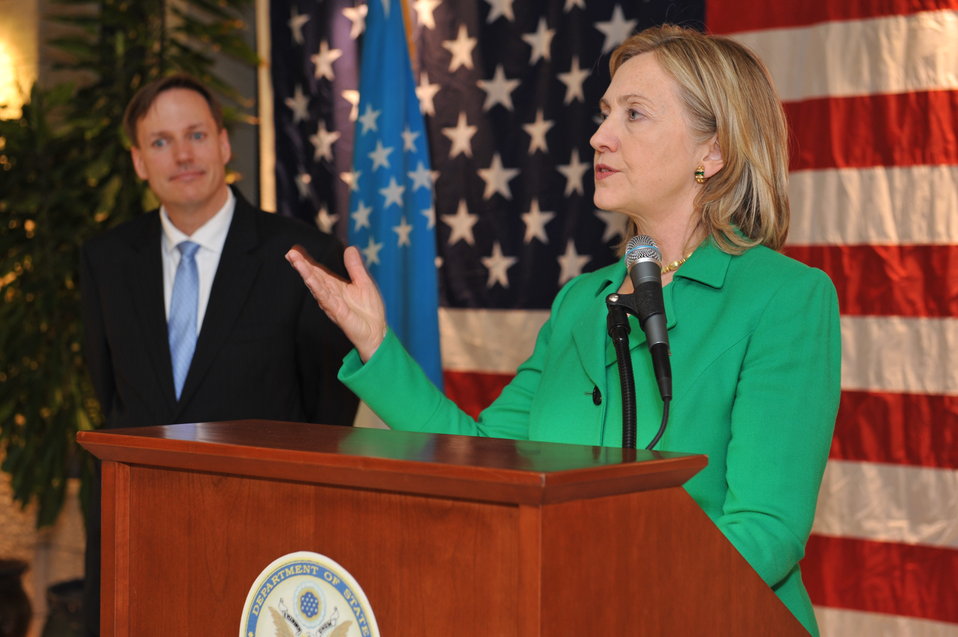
Secretary Clinton Speaks to the U.S. Embassy Tashkent Community

U.S. Secretary of State, with U.S. Embassy Tashkent Charge d'Affairs Duane Butcher on her left, speaks to the U.S. Embassy Tashkent community in Tashkent, Uzbekistan, on December 2, 2010.